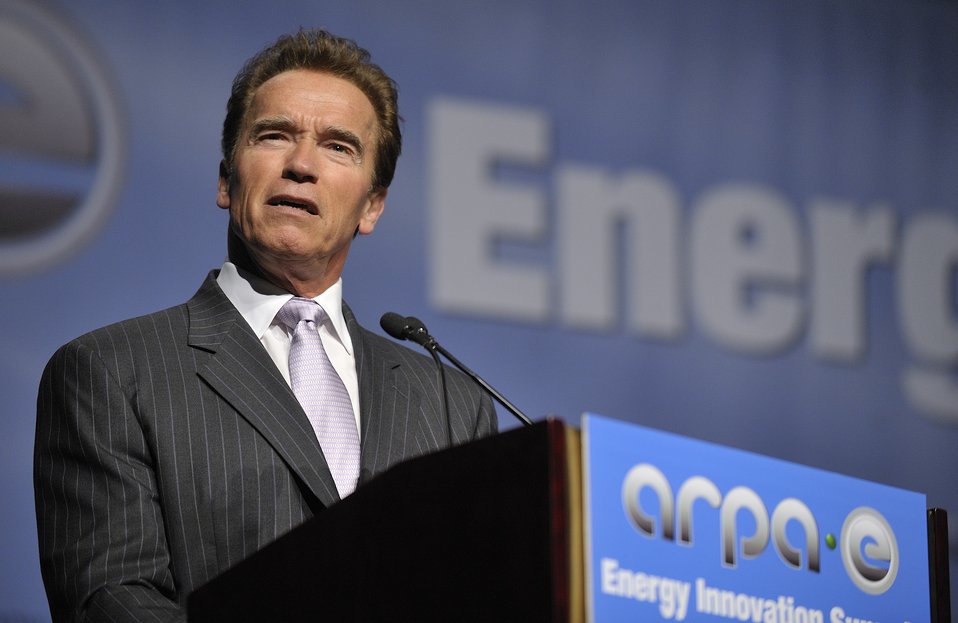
ARPA-E Energy Innovation Summit 2011, 15 of 83

Arnold Schwarzenegger, Former Governor of California. | Energy Department Image | Photo by Ken Shipp | Public Domain |